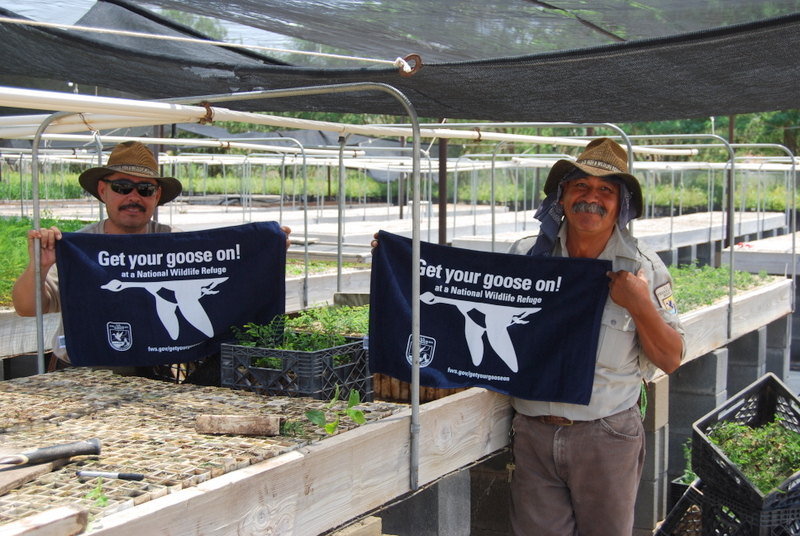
Get Your Goose On!

USFWS employees at the revegetation station on Marinoff tract at the Lower Rio Grande Valley National Wildlife Refuge.